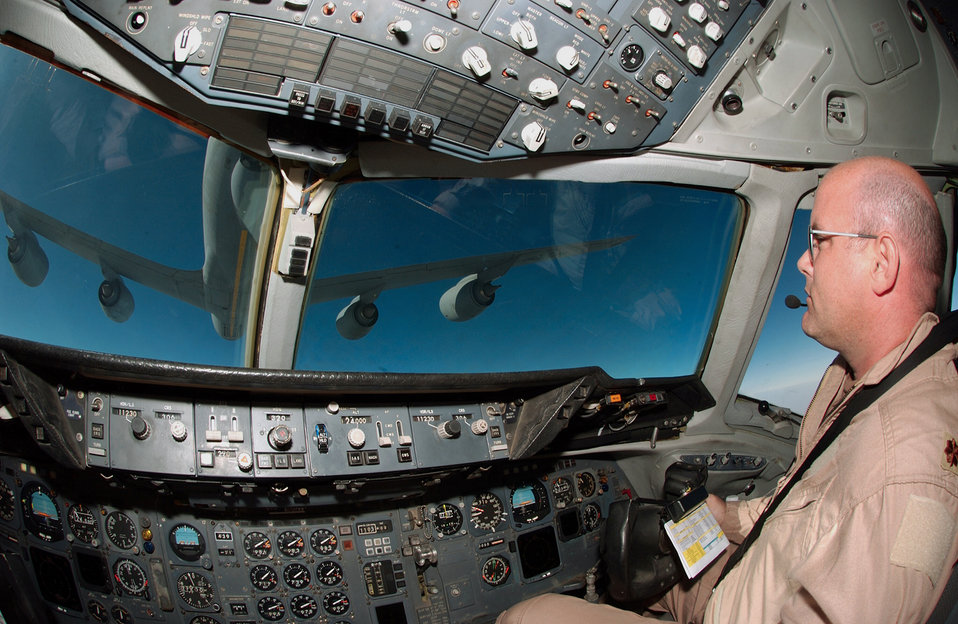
Tankers fuel war on terror

OVER SOUTHWEST ASIA -- Maj. Joe Burshnick positions his KC-10 Extender to receive fuel from a KC-135 Stratotanker. Major Burshnick is a pilot with the 908th Expeditionary Aerial Refueling Squadron at a forward-deployed location. The squadron is the only Air Force unit that flies both aircraft.